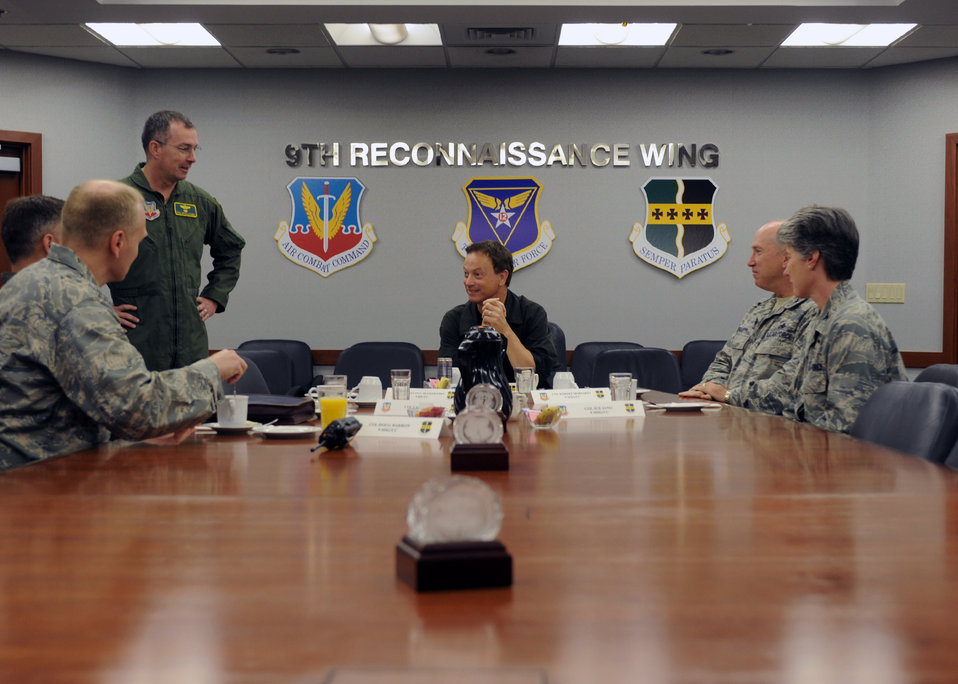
Gary Sinise receives a mission brief June 7, 2011, at Beale Air Force Base, Calif., prior to beginning training to take a high flight to 70,000 feet in a U-2 Dragon Lady.